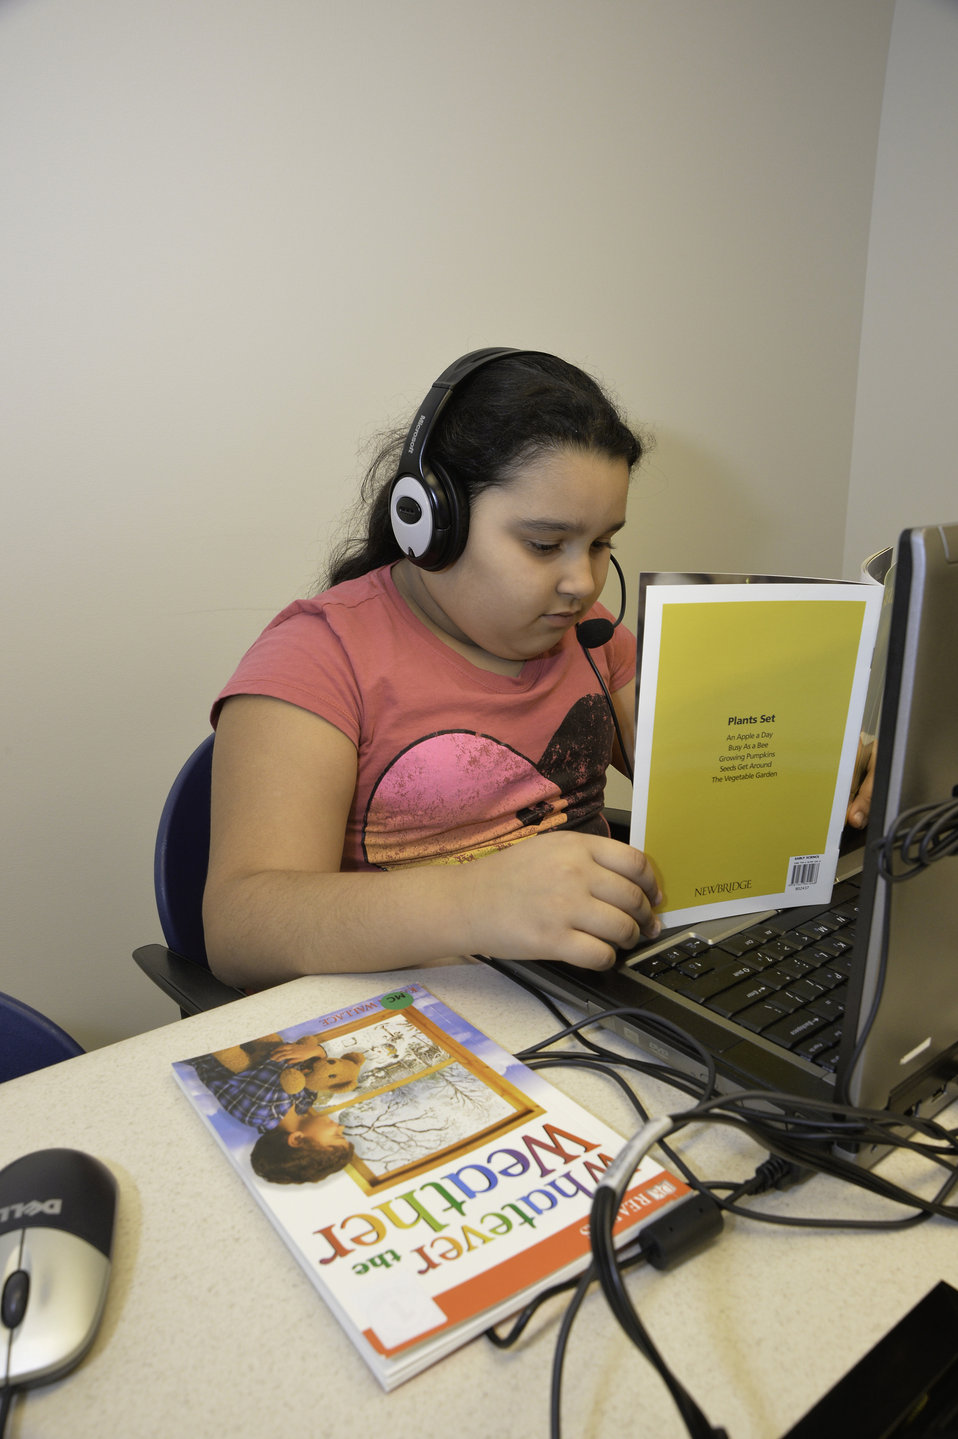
Mohegan youth enrolled in after-school program, work on computers with Internet access to help them improve their reading skills at the Mohegan Tribe Community Center and Government Building in Uncasville, CT on Nov. 19, 2013. A U.S. Department of Agriculture (USDA) Rural Development (RD) Community Facility Loan was provided to the Mohegan Tribe for the construction of the Mohegan Tribe Community Center and Government Building in Uncasville, CT. USDA’s RD Community Facilities Programs makes and guarantees loans to develop essential community facilities in rural areas and towns of up to 20,000 in population. Loans and guarantees are available to public entities such as municipalities, counties, parishes, boroughs, and special-purpose districts, as well as to non-profit corporations and tribal governments. The 160,000 square foot building Center hosts an exhibit celebrating federal recognition, history of Mohegan Chiefs, a new Library and Archives space, new Arts and Crafts room, a new gymnasium, and a new community room to enjoy food and family. The Center will continue the Tribe’s plan for growth and meeting the needs of its members.